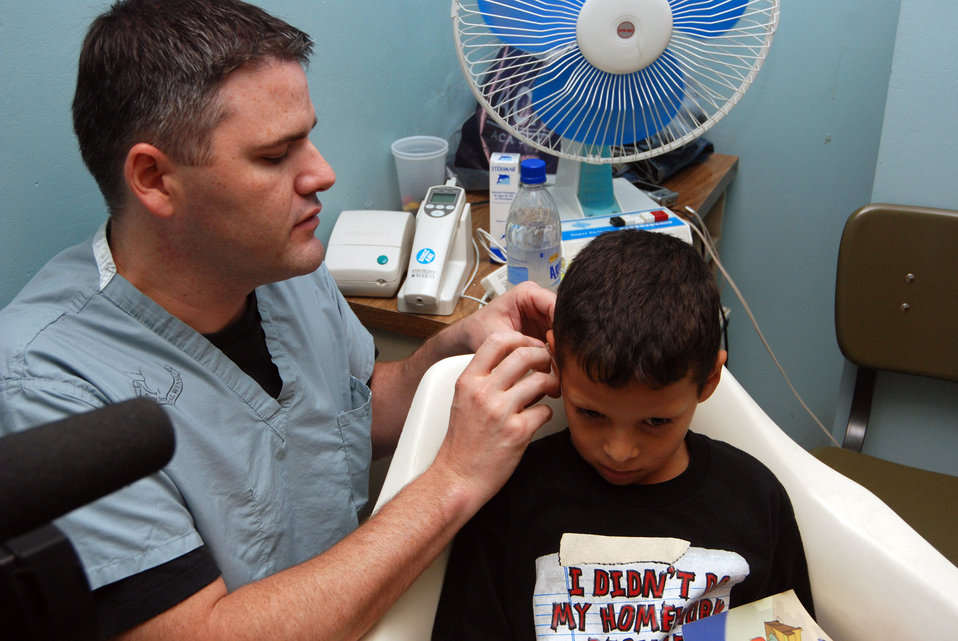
Wilford Hall team treats ENT patients in Honduras

Capt. Matt Williams treats a young patient June 17at Hospital Escuela in Tegucigalpa, Honduras. The audiology team performed more than 160 hearing tests and fitted more than 50 hearing aids during their a two-week readiness training mission to the hospital. Captain Williams an audiologist from Wilford Hall Medical Center in San Antonio, Texas.